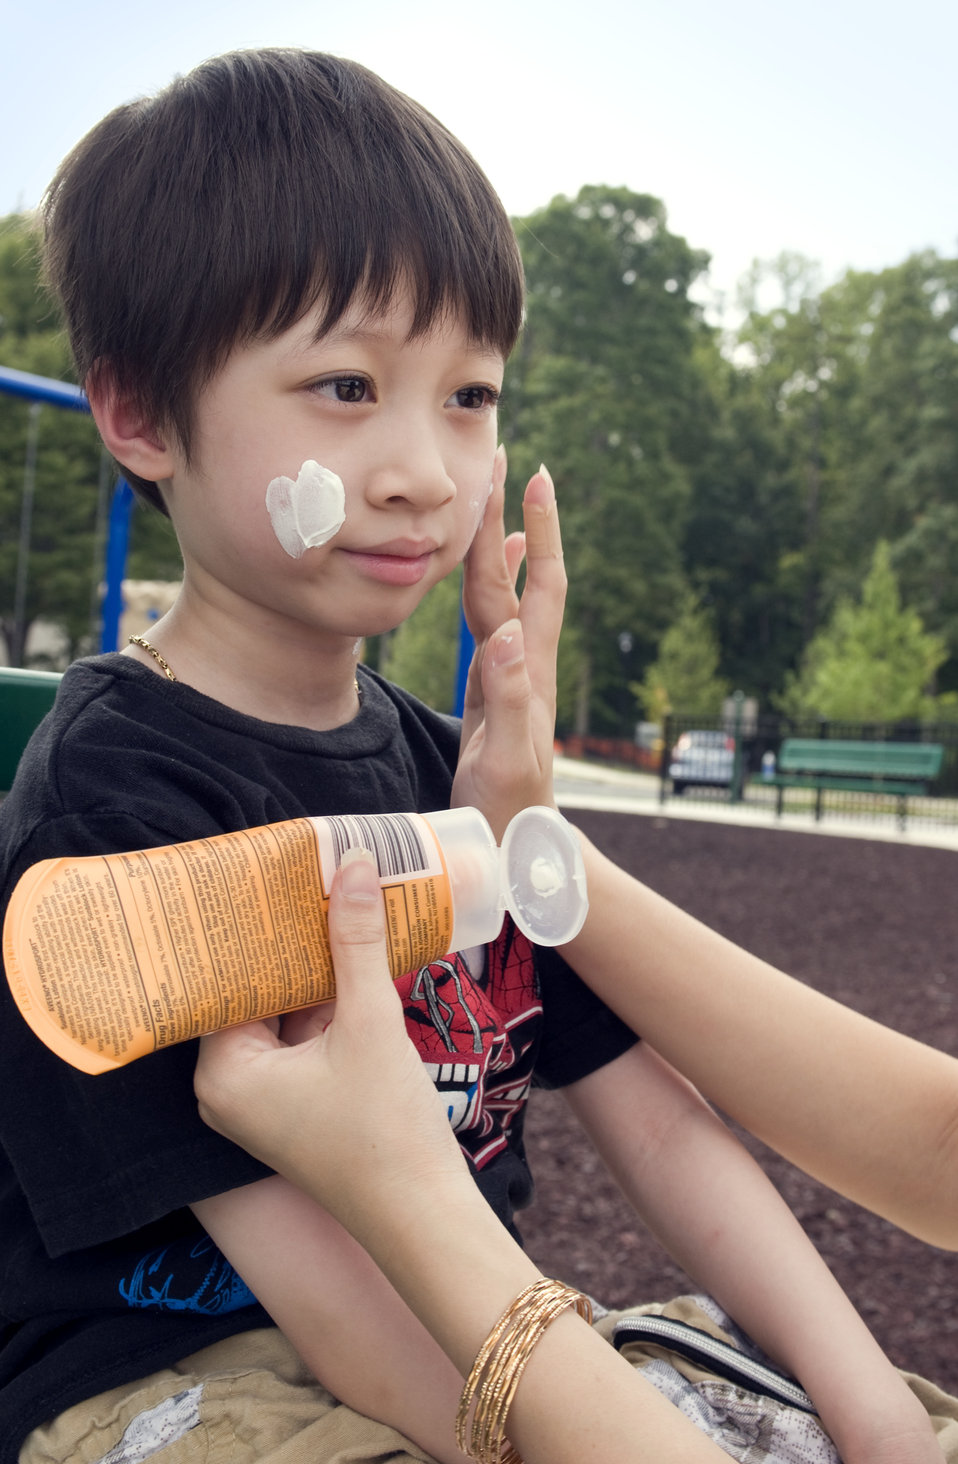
Taking a time-out at a neighborhood playground, this young boy was receiving a reapplication of a coating of protective sunscreen by his mother. In this particular view, his mother's gentle hands were massaging the protective cream into her son's cheeks.